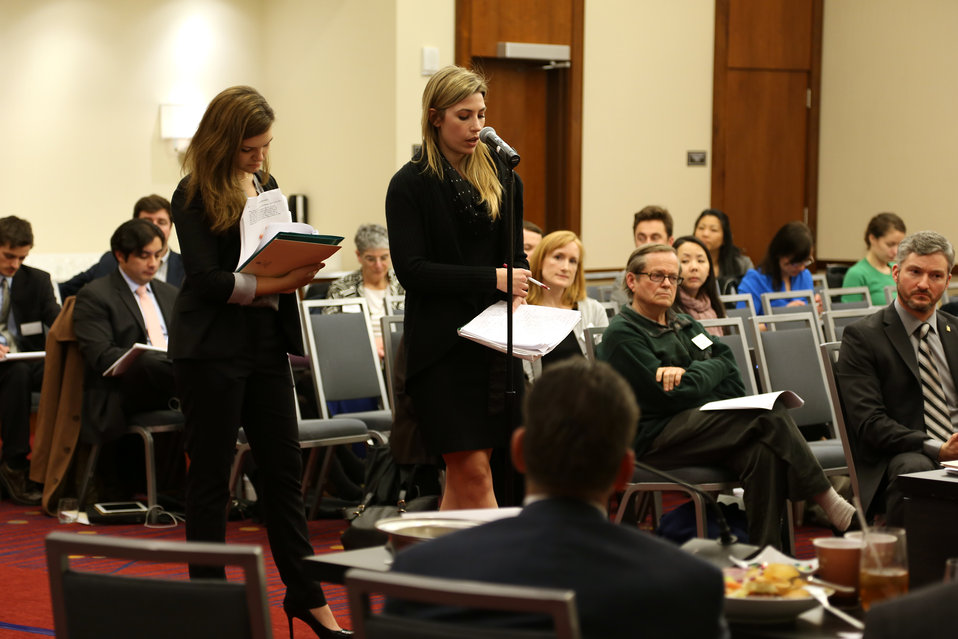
Wildlife Trafficking Advisory Council Meeting March 20, 2014